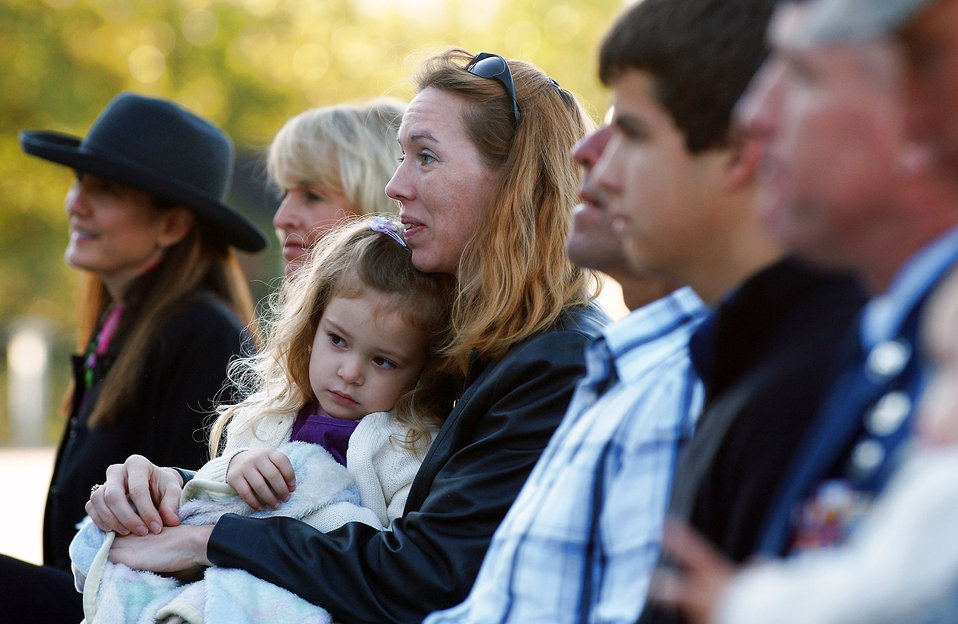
Fallen EOD Airman dedication ceremony

Mrs. Rebecca Clemmons holds daughter, Isabelle, during Master Sgt. Brad Clemmons, 354th Civil Engineer Squadron explosive ordnance disposal flight, memorial dedication ceremony in his honor Aug. 21, 2008, at Eielson Air Force Base, Alaska. Sergeant Clemmon's family, friends and co-workers attended the building dedication ceremony to honor his ultimate sacrifice.